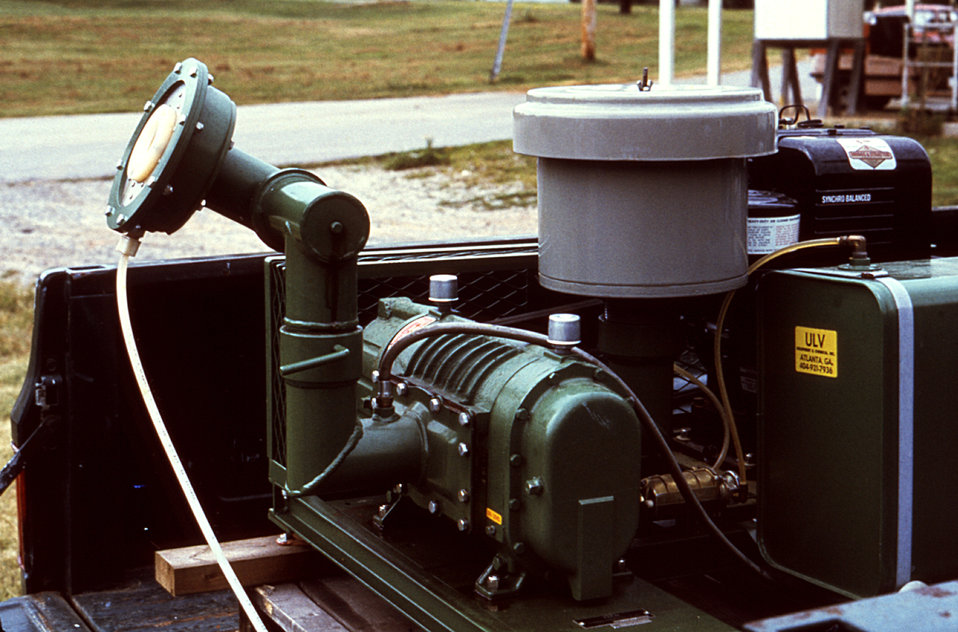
This 1981 image depicts a truck-mounted LECO-HD ULV (ultra-low volume) non-thermal fog generator.